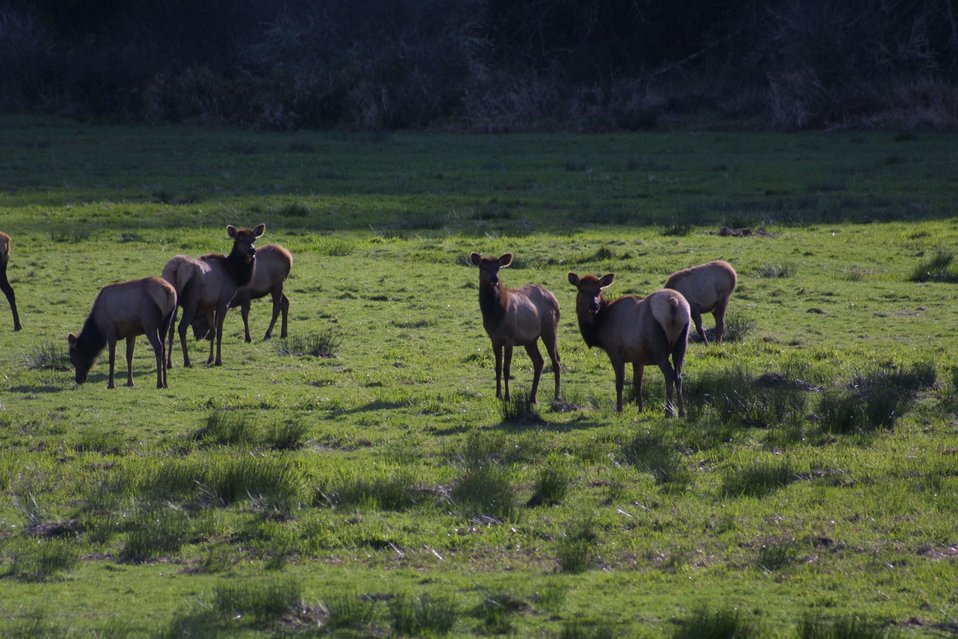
Elk at the Dean Creek Watchable Wildlife site near Reedsport, Oregon.